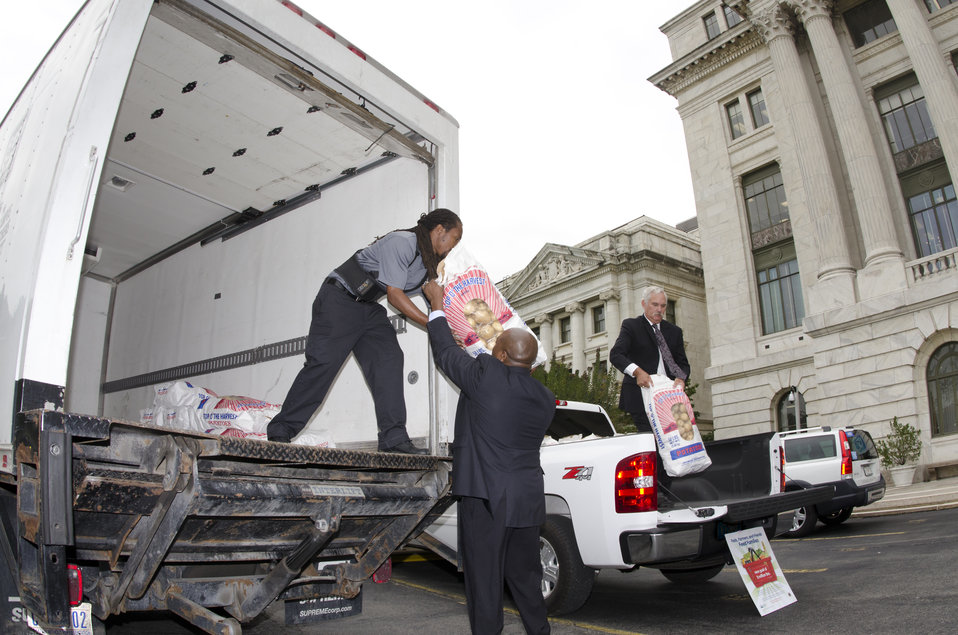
Donation complete, Agriculture Under Secretary Farm and Foreign Agriculture Service (FFAS) Michael Scuse (right) donated 1,000 pounds of potatoes to DC Central Kitchen, in participation with the Feds Feed Families Food Drive, on Monday August 20, 2012 in front of the Agriculture headquarters in Washington, D.C. FFAS Deputy Under Secretary Karis Gutter (center) transfer the 20 50-pound bags from nearby pick-up to cargo truck. Under Secretary Scuse, a farmer himself purchased and loaded his pick-up this weekend with half a ton of potatoes at nearby Wicks farm, in Delaware. Secretary Scuse farms 1,700 acres of corn, soybeans and wheat. He says that this is the first of many more donations this year. DC Central Kitchen Fleet Coordinator/Transportation Driver Anthony Turner (left) received the spuds in one of the kitchen’s trucks. When asked when the potatoes will get to people’s mouths, he replied, “Couple hours. Once I get it to the kitchen, they have volunteers there, we work off volunteers, (and) if it wasn’t for the volunteers we would not run. Once I get it back, the volunteers will cut it up, shave them, dice or whatever they are going to do, they are going to put it into soup, or something; they (the recipients) will get it by tonight.”